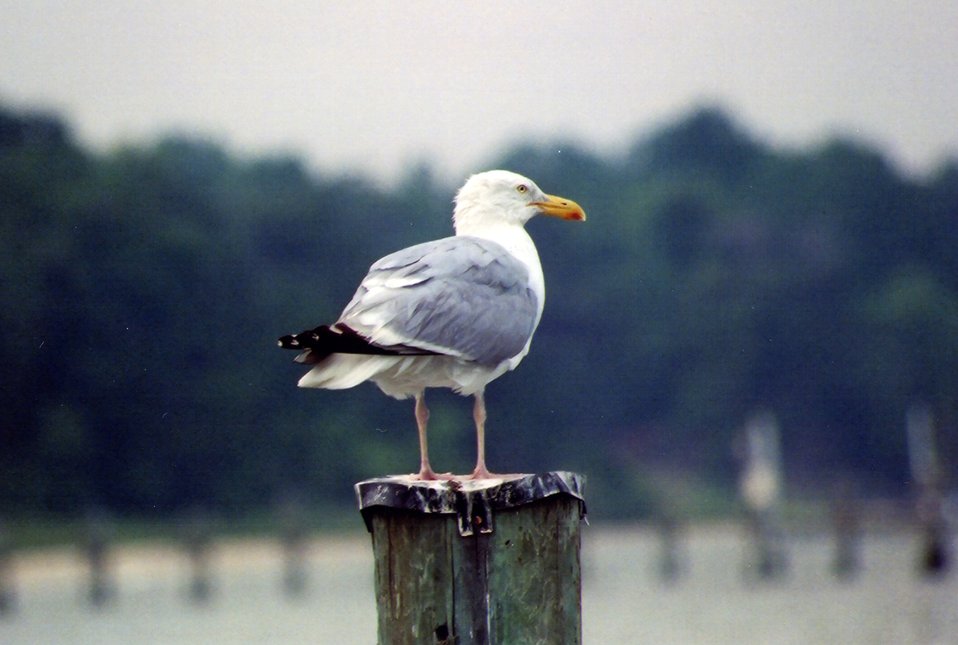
Herring gull on pier piling.